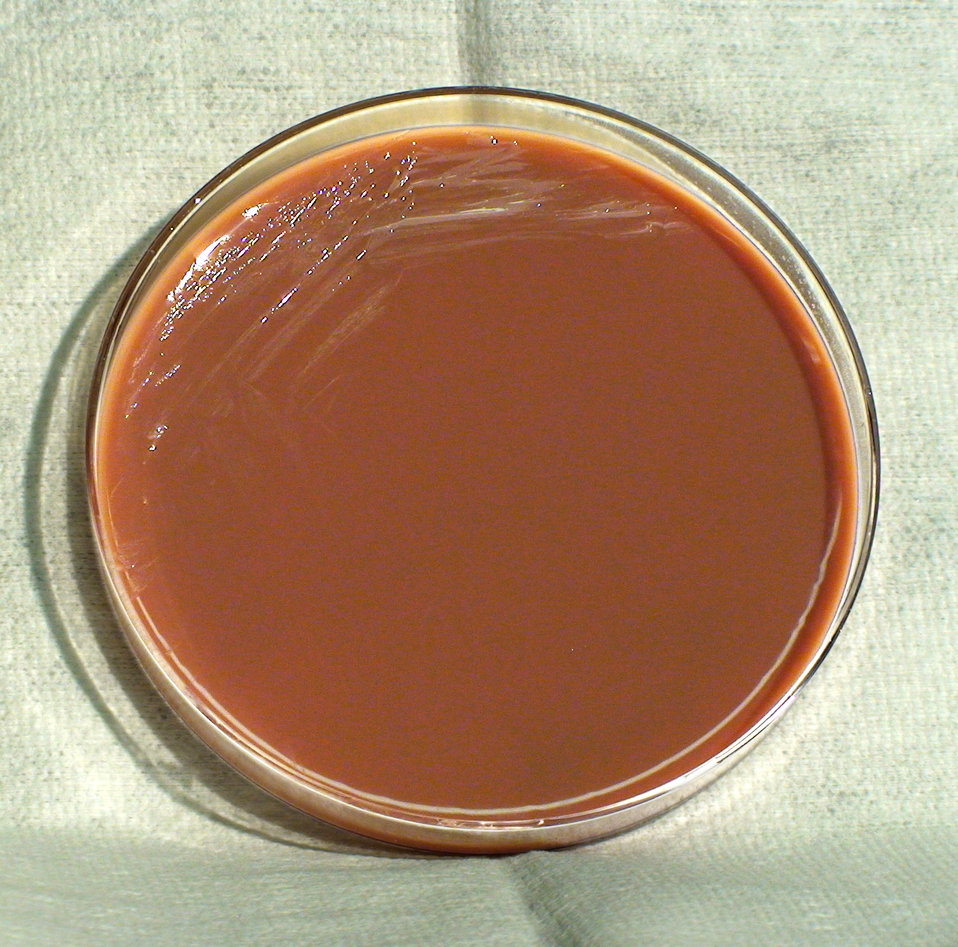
This photograph depicts the colonial morphology displayed by Gram-negative Brucella abortus bacteria, which was grown on a medium of chocolate agar, for a 24 hour time period, at a temperature of 37�C. For a closer view of these bacterial colonies, see PHIL 12369, as well as 12397 for a view of B/ abortus colonial growth on the same medium and temperature, but for twice the time period (48hr). Brucella spp., including B. abortus, cause a disease known as brucellosis.